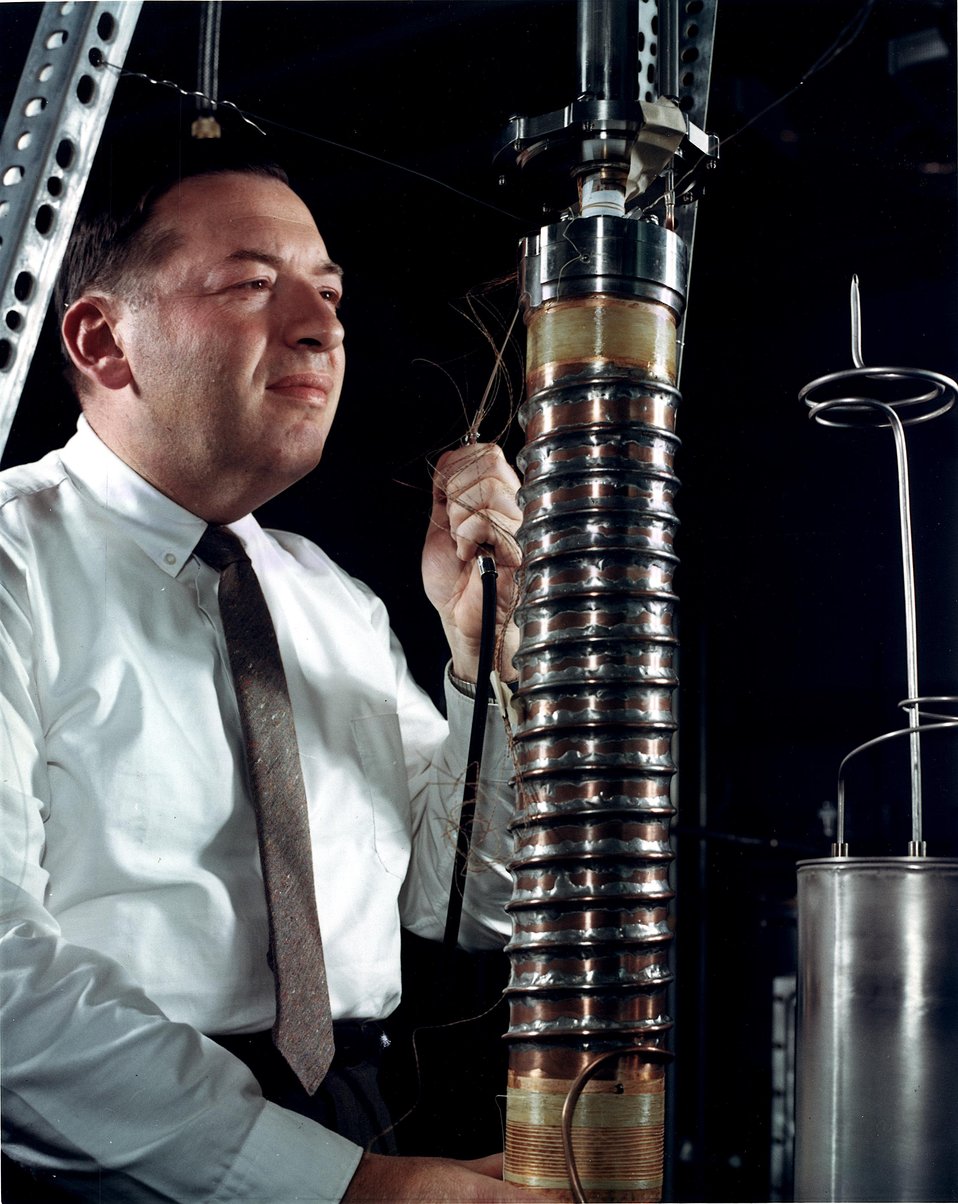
A chemist is using a crystal to measure the differences
in vapor pressures between the isotopic varieties of a substance.